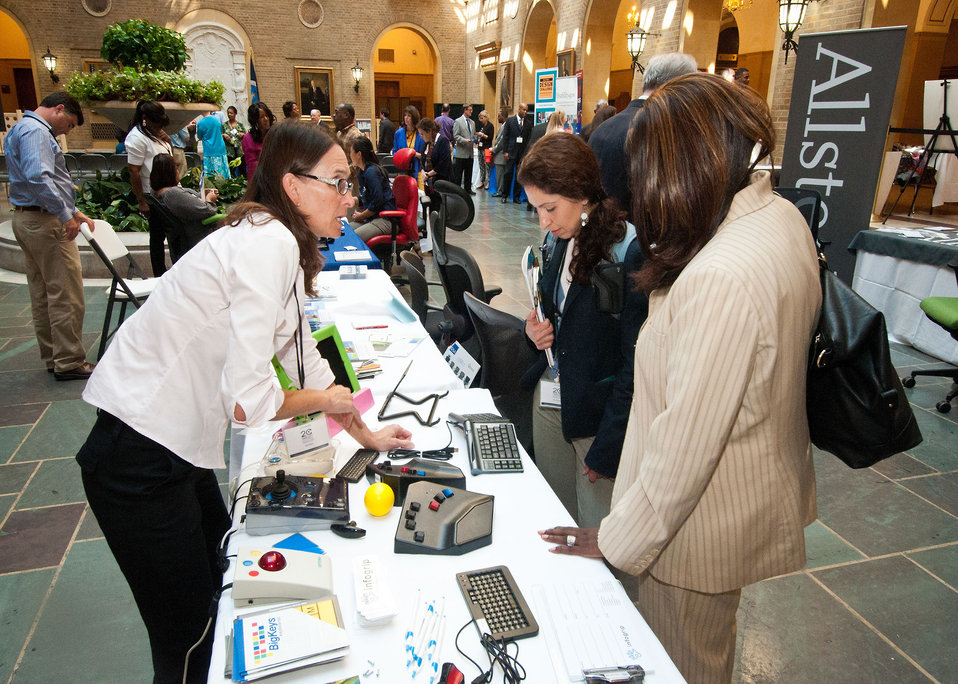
INFOGRIP representative Liza Jacobs (left) demonstrates computer access assistive technology for employees with special needs to U.S. Department of Commerce employees Linel Soto (center) and Brenda Jenkins at the U.S. Department of Agriculture (USDA) Departmental Management (DM) Target Center 20th Anniversary at USDA in Washington, D.C. on Thursday, Sept. 13, 2012. The USDA Target Center has provides Assistive Technology to employees with disabilities. The Center has assisted thousands of individuals with disabilities to further contribute to the mission of USDA.